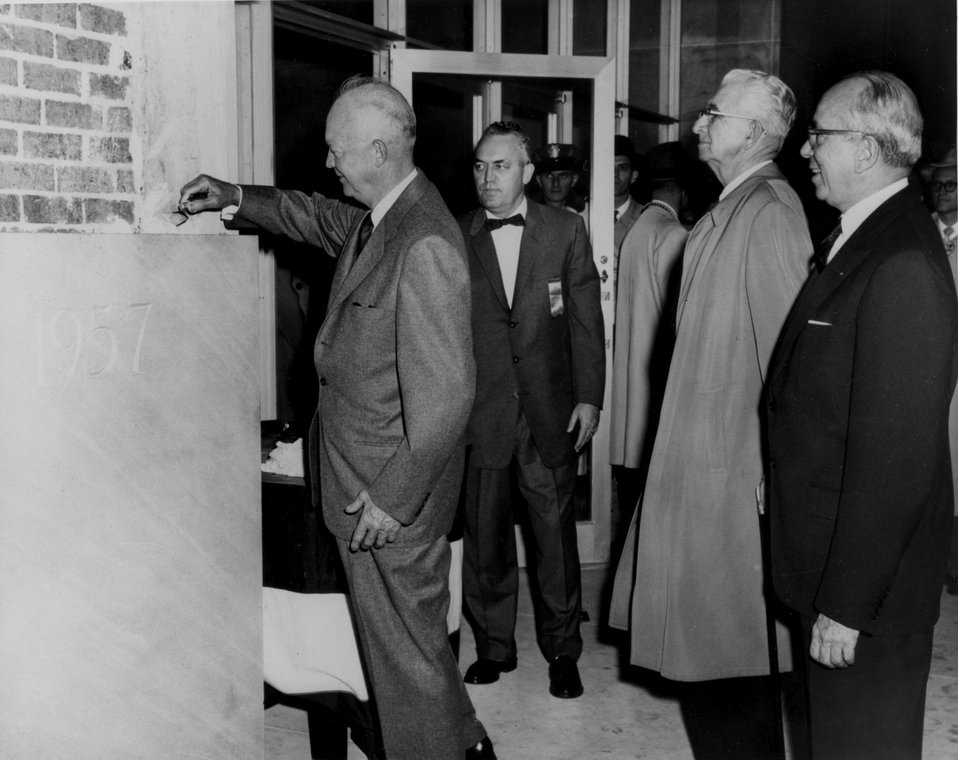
President Eisenhower lays the cornerstone, Nov. 8, 1957. AEC Chairman Strauss and JCAE Chairman Durham assist in the ceremony. c. 1957